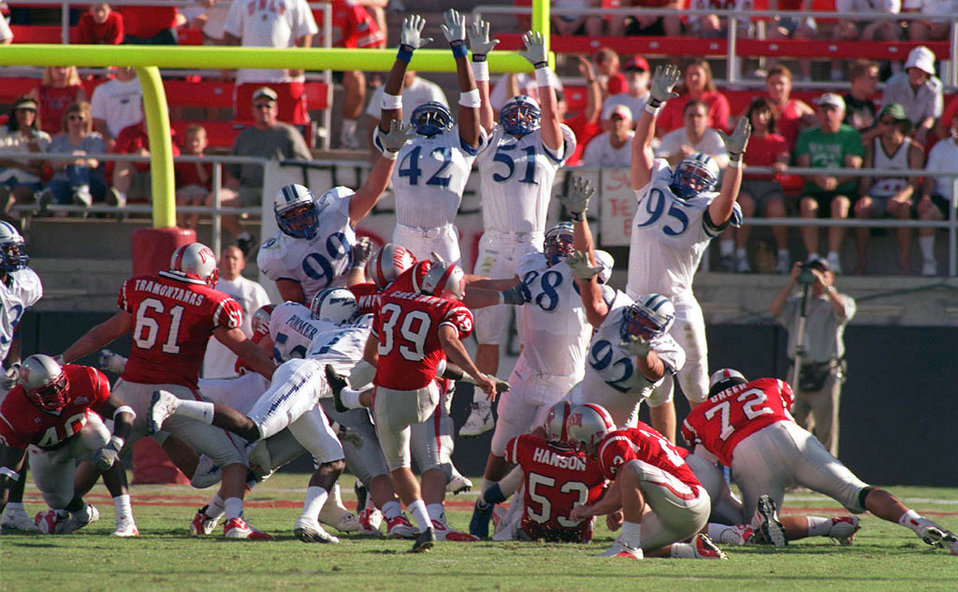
Rebels Beat Falcons

LAS VEGAS -- The Air Force Academy Falcons special teams unit blocked two point after attempts in their loss to the University of Nevada, Las Vegas Rebels, Sept. 30, 2001. The Rebels outscored the Falcons 34-13 after the Falcons failed to score in the second half.